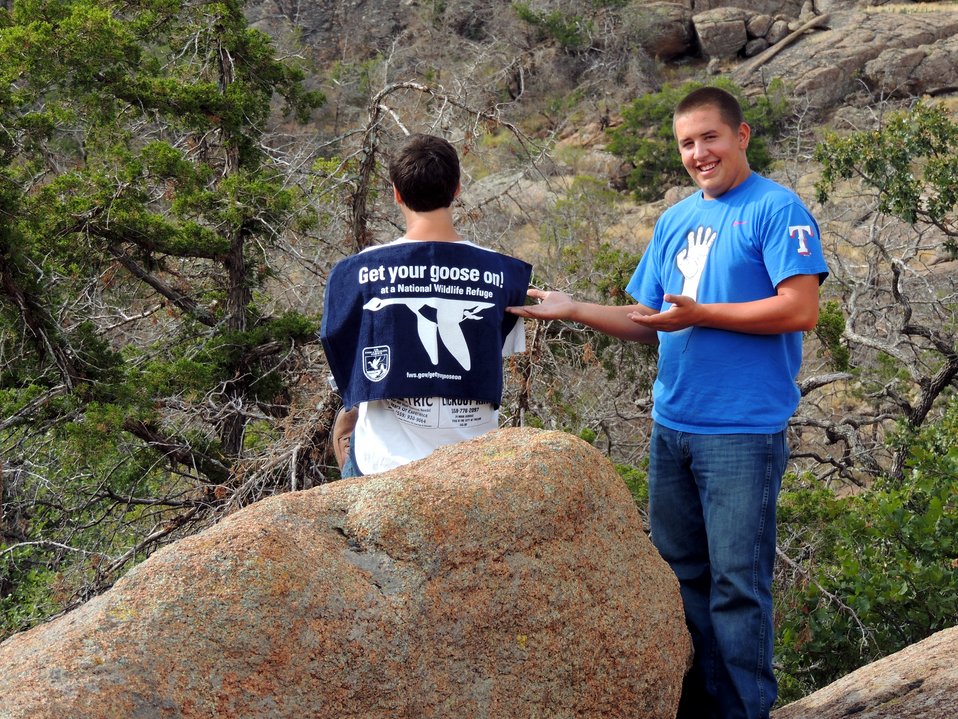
Get Your Goose On!

Wichita Mountains National Wildlife Refuge in Oklahoma.